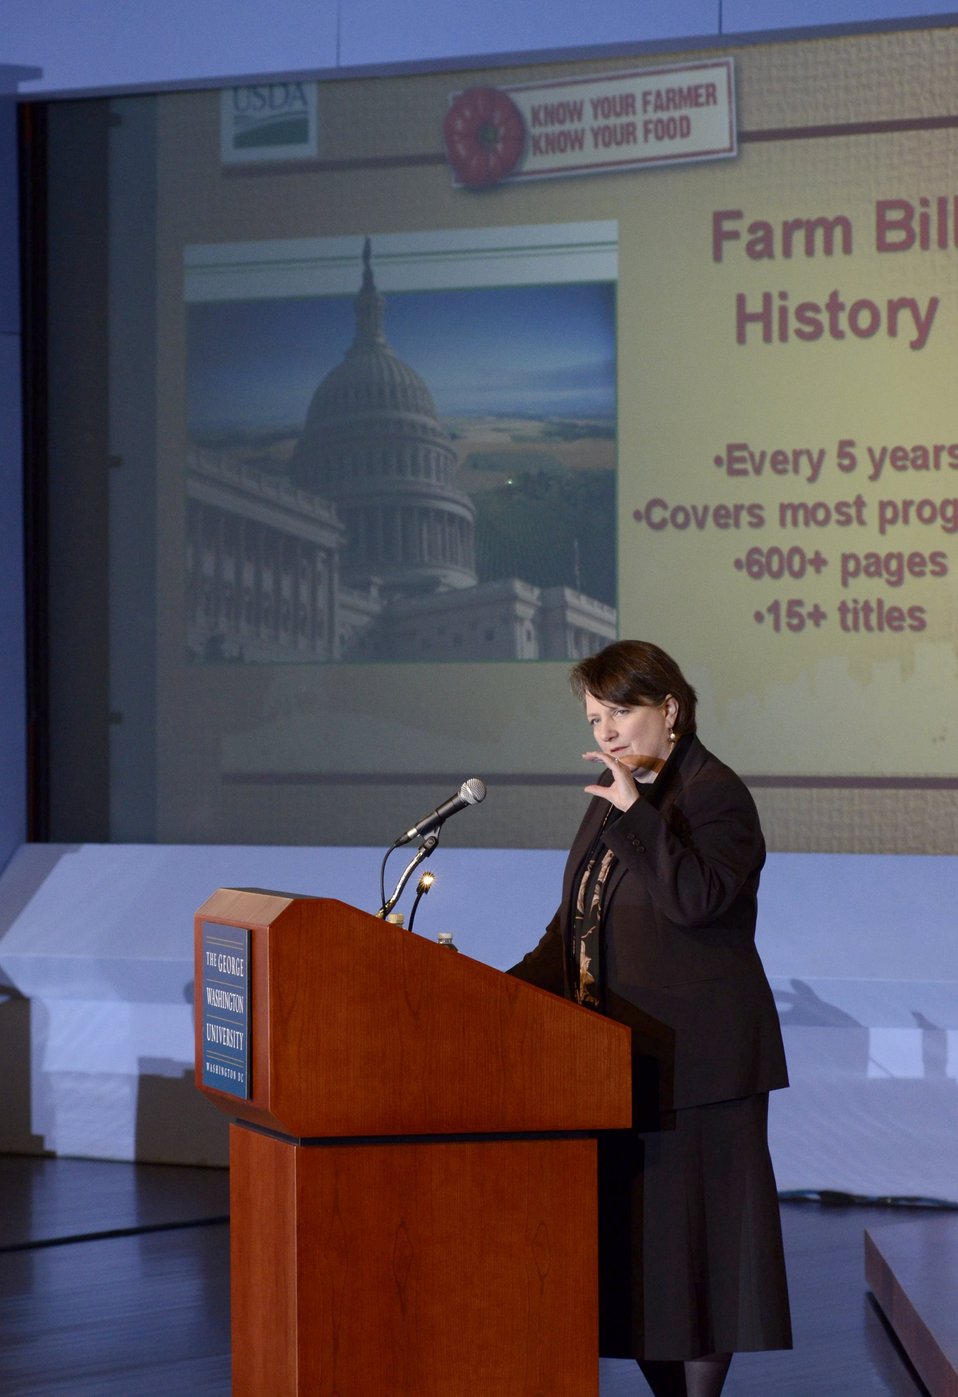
Agriculture Deputy Secretary Dr. Kathleen Merrigan keynote speaker 'Shaping the Farm Bill for a Sustainable Future.' Forum at the Trachtenberg School of Public Policy and Public Administration, George Washington University in Washington, D.C., on Thursday, March 1, 2012.